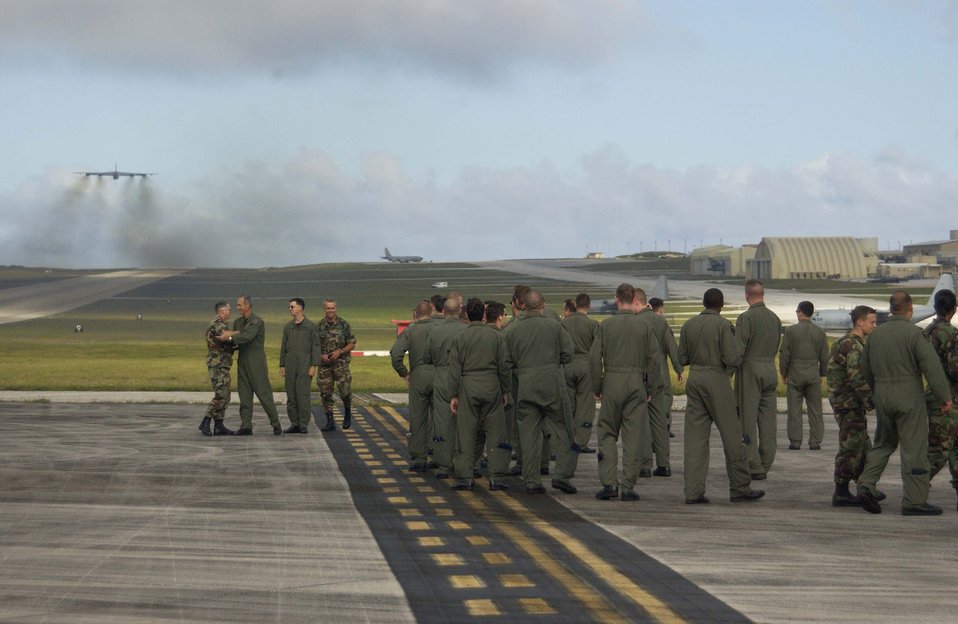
100-percent mission effectiveness

Airmen deployed from Minot Air Force Base, N.D., as part of the 36th Expeditionary Operations Group celebrate the successful launch of their 200th consecutive B-52 Stratofortress sortie during a five-month deployment to Andersen Air Force Base, Guam. The group's 36th Expeditionary Aircraft Maintenance Squadron managed a 100-percent mission effectiveness rate during their deployment here.